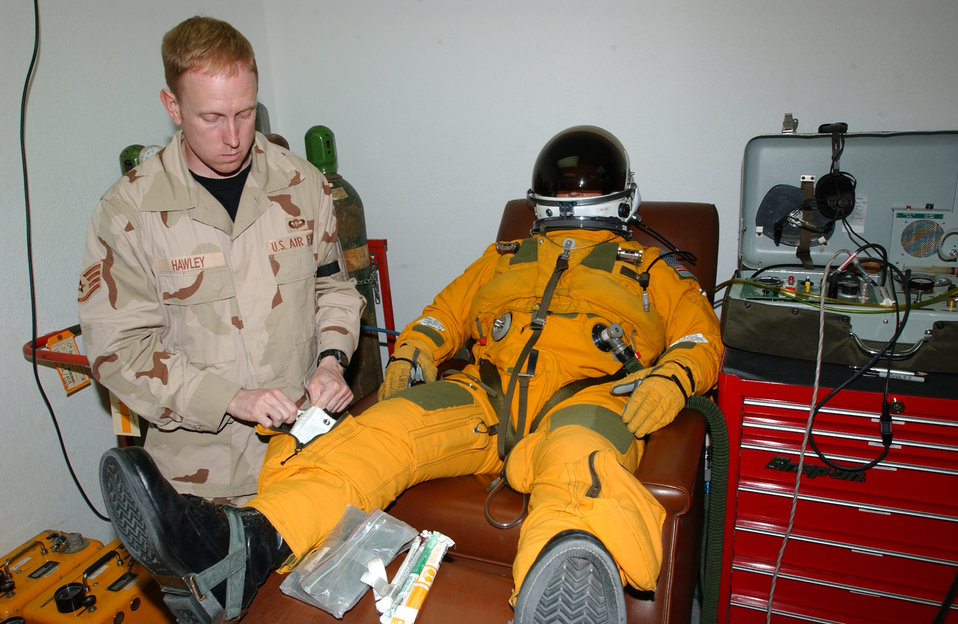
Life support team puts pressure on high-flying pilots

SOUTHWEST ASIA -- Staff Sgt. Craig Hawley prepares Maj. Cory Bartholomew for a U-2 reconnaissance aircraft mission. U-2 pilots wear space suits because they typically fly higher than 60,000 feet -- twice as high as a commercial airliner. Sergeant Hawley is the launch and recovery supervisor for the 99th Expeditionary Reconnaissance Squadron's physiological support division. Major Bartholomew is a U-2 pilot with the 99th ERS.